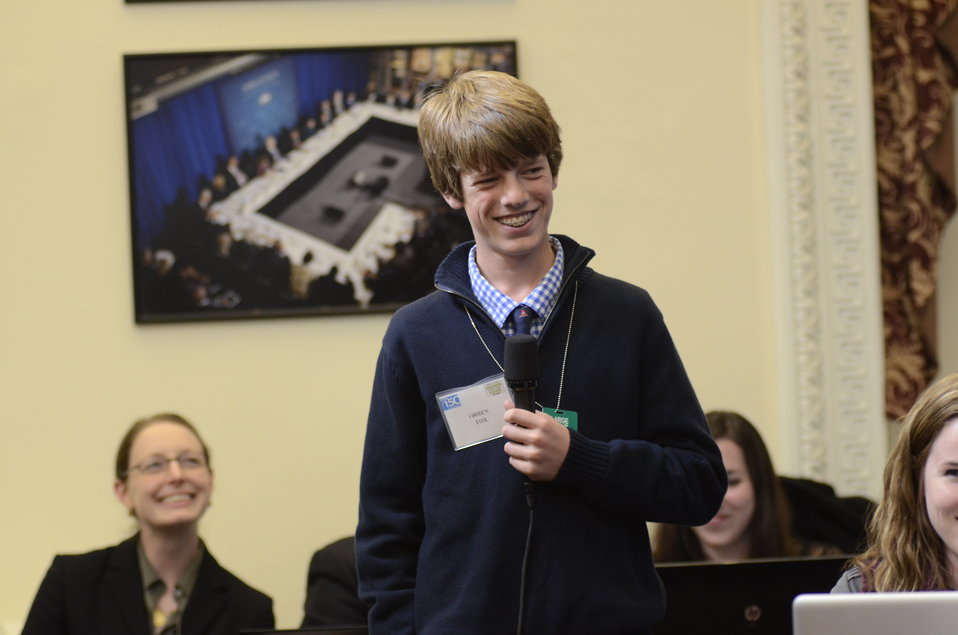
Orren Fox, (aka @happychickens) a teenage chicken/bee keeper, from Boston, talked about learning where his food comes, from raising chickens in his backyard since he was nine. Now he has 32 chickens, 4 ducks and over 200,000 bees. He is the face of Agriculture’s future. He is joined by his father, Henry, during a Know Your Farmer Compass event that used twitter social media to continue the National Conversation on Local and Regional Food projects and how they offer economic opportunities to local farmers, ranchers and food entrepreneurs. The virtual conversation via twitter was from the White House, in Washington, D.C., on Monday, March 5, 2012.